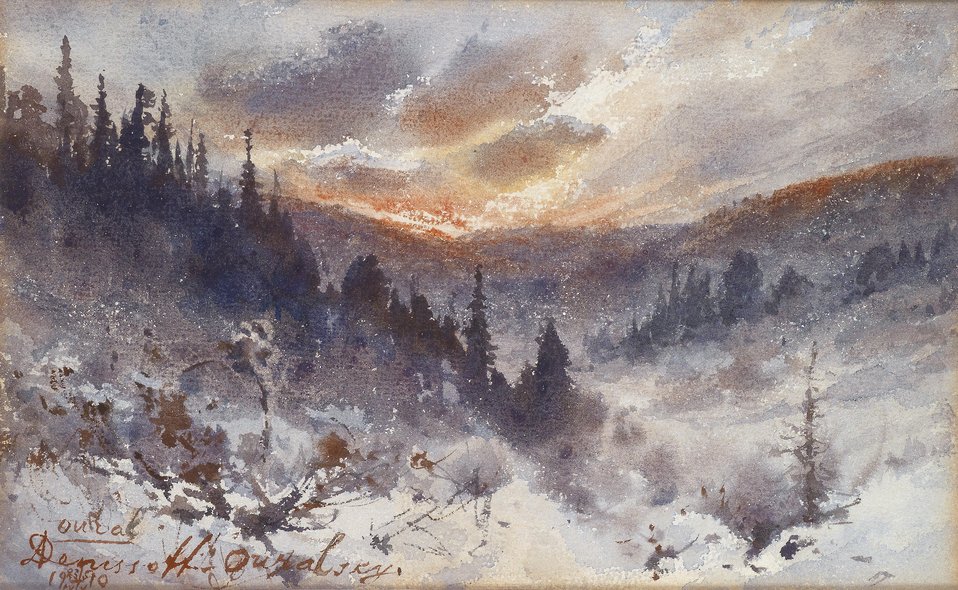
Deutsch: Der Ural, signiert, datiert in der französischen Transkription Denissoff Ouralsky 1910 Oural, Aquarell vermutlich auf Papier, 13,5 x 22,5 cm